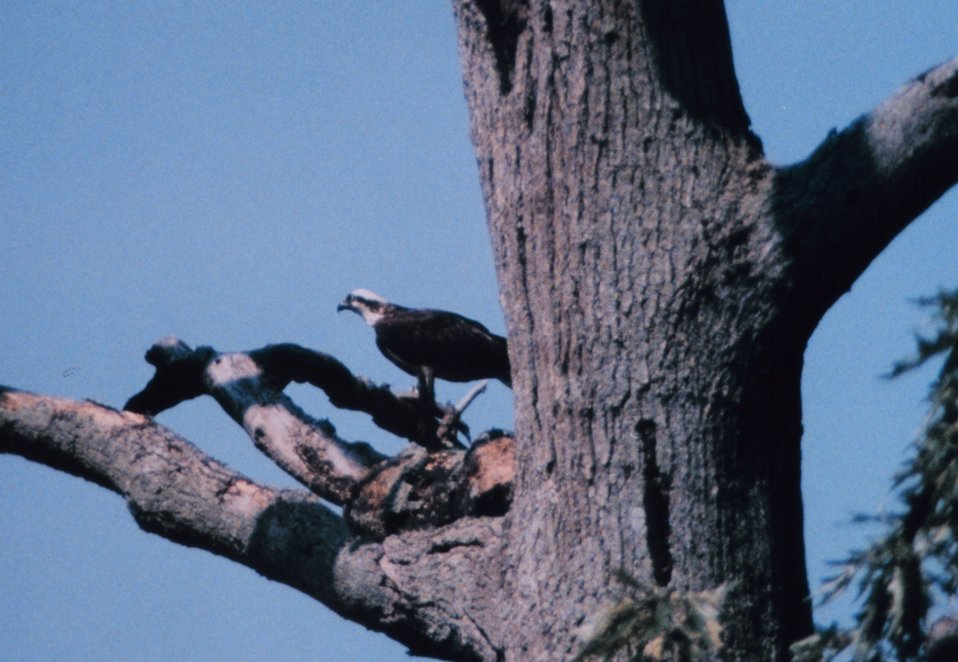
Profile view of an osprey perched in a dead tree.